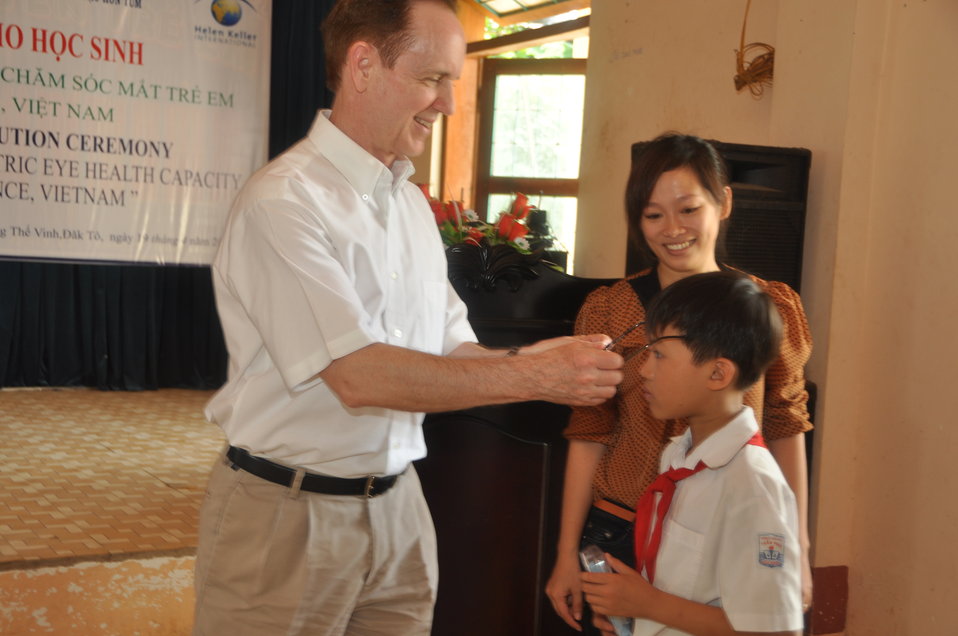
School children in Dak To, Kon Tum Province, receive eyeglasses under a program supported by USAID and partners HKI and World Learning